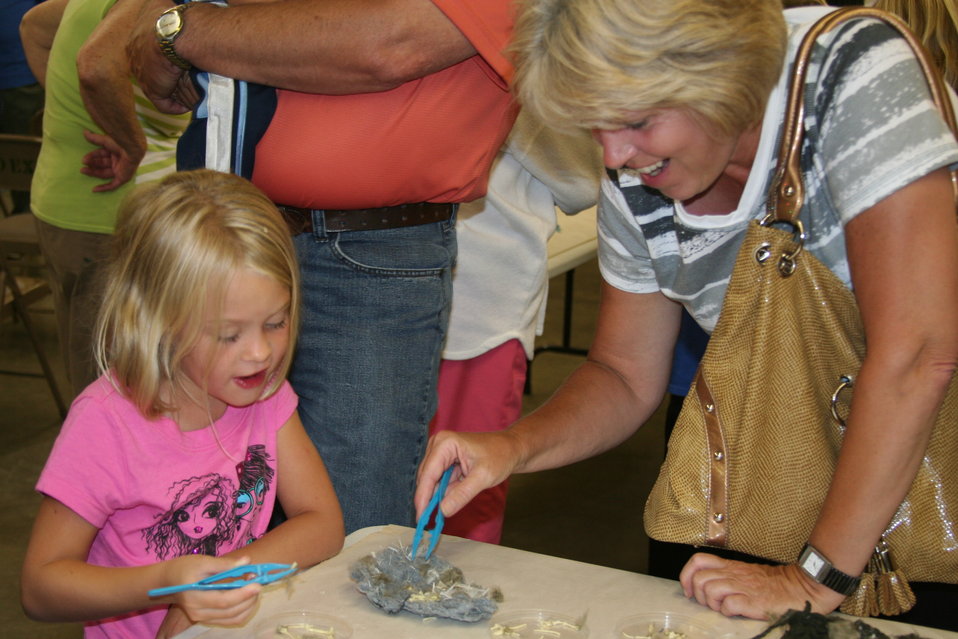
Creatures of the Night 2011

Children finding many different types of small mammal bones in various owl pellets.